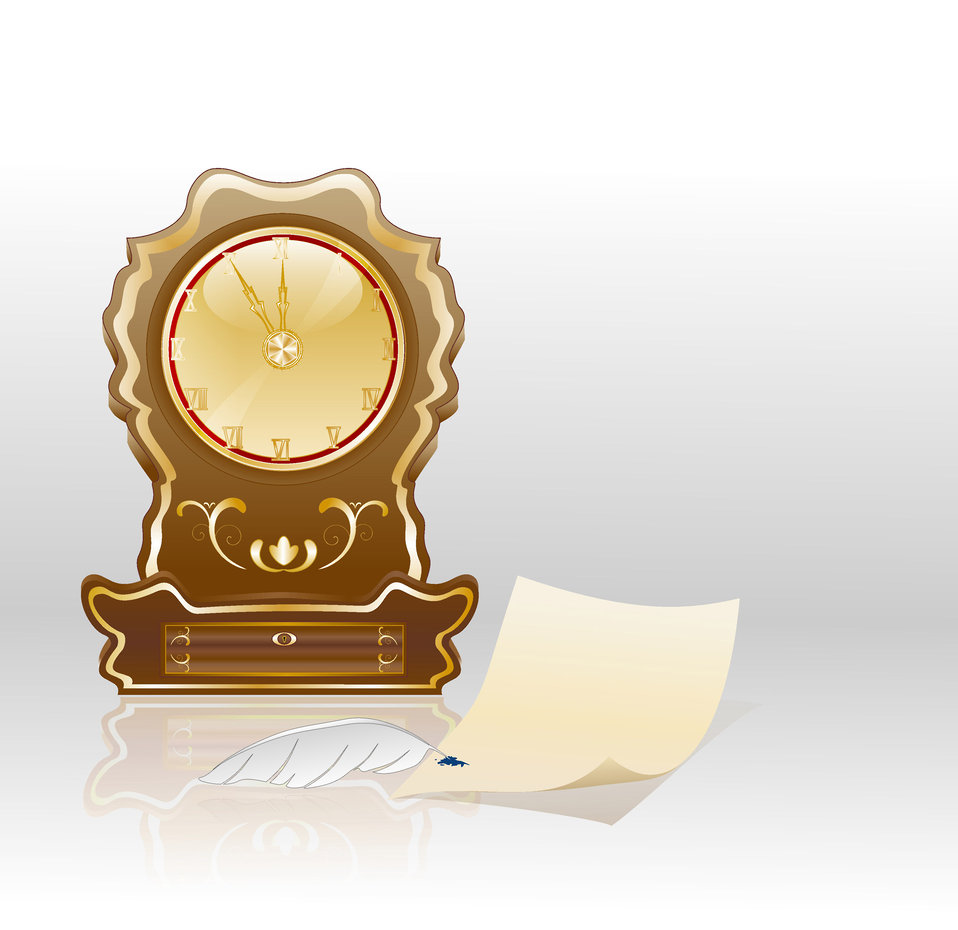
Antique clock

Vector background with a clock and a piece of paper.